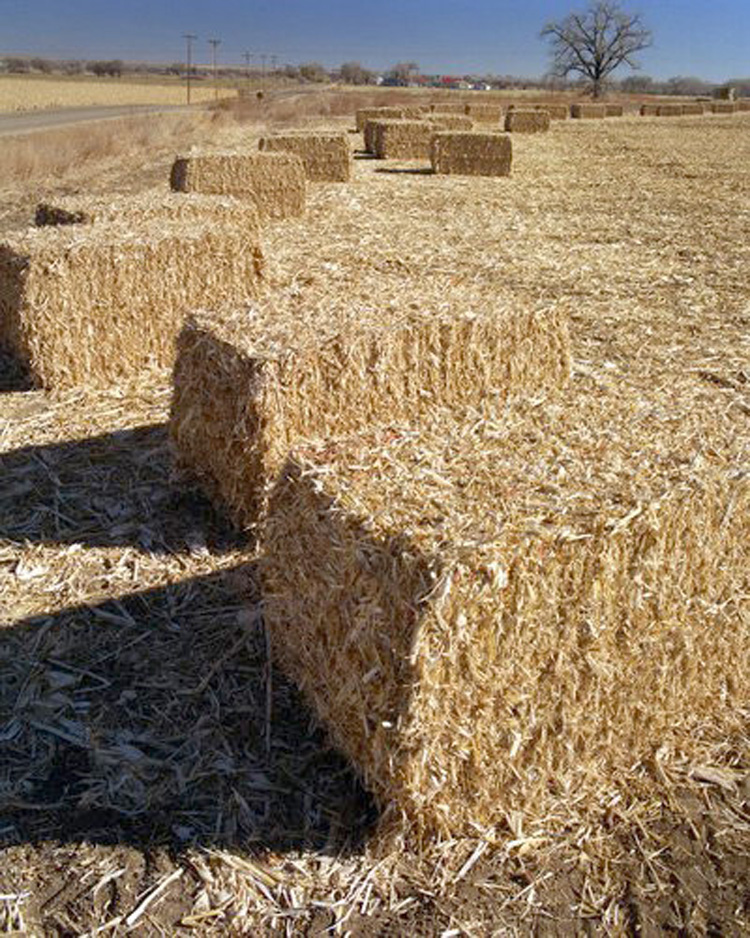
Corn stover, bale is part of the Idaho National Laboratory bioenergy program.